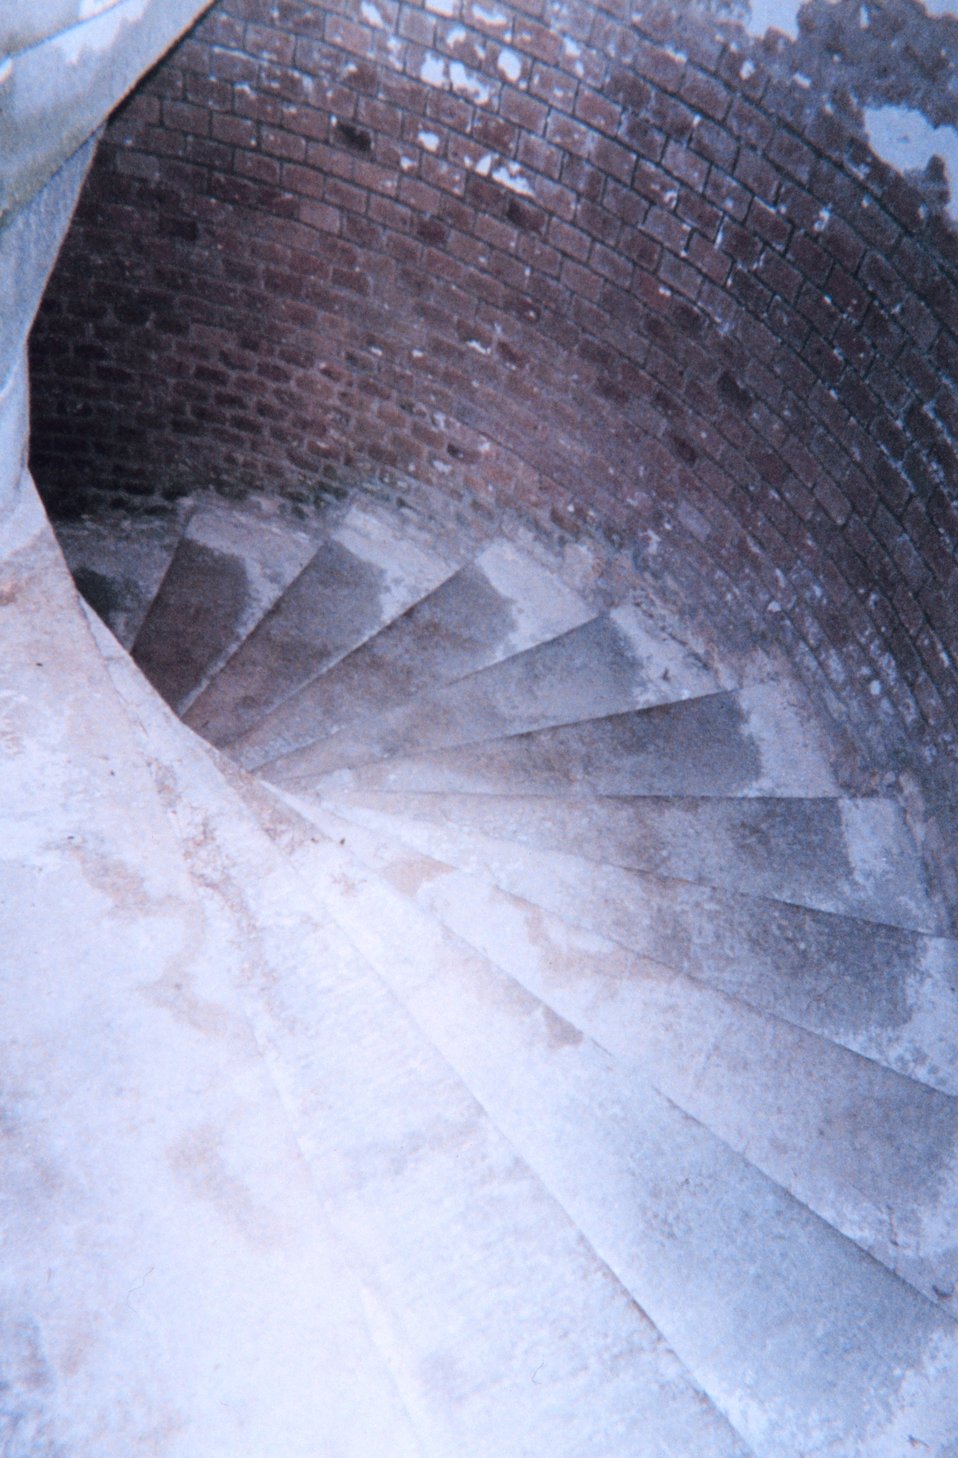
A spiral staircase leading down from the top of Fort Jefferson at Dry Tortugas National Park.